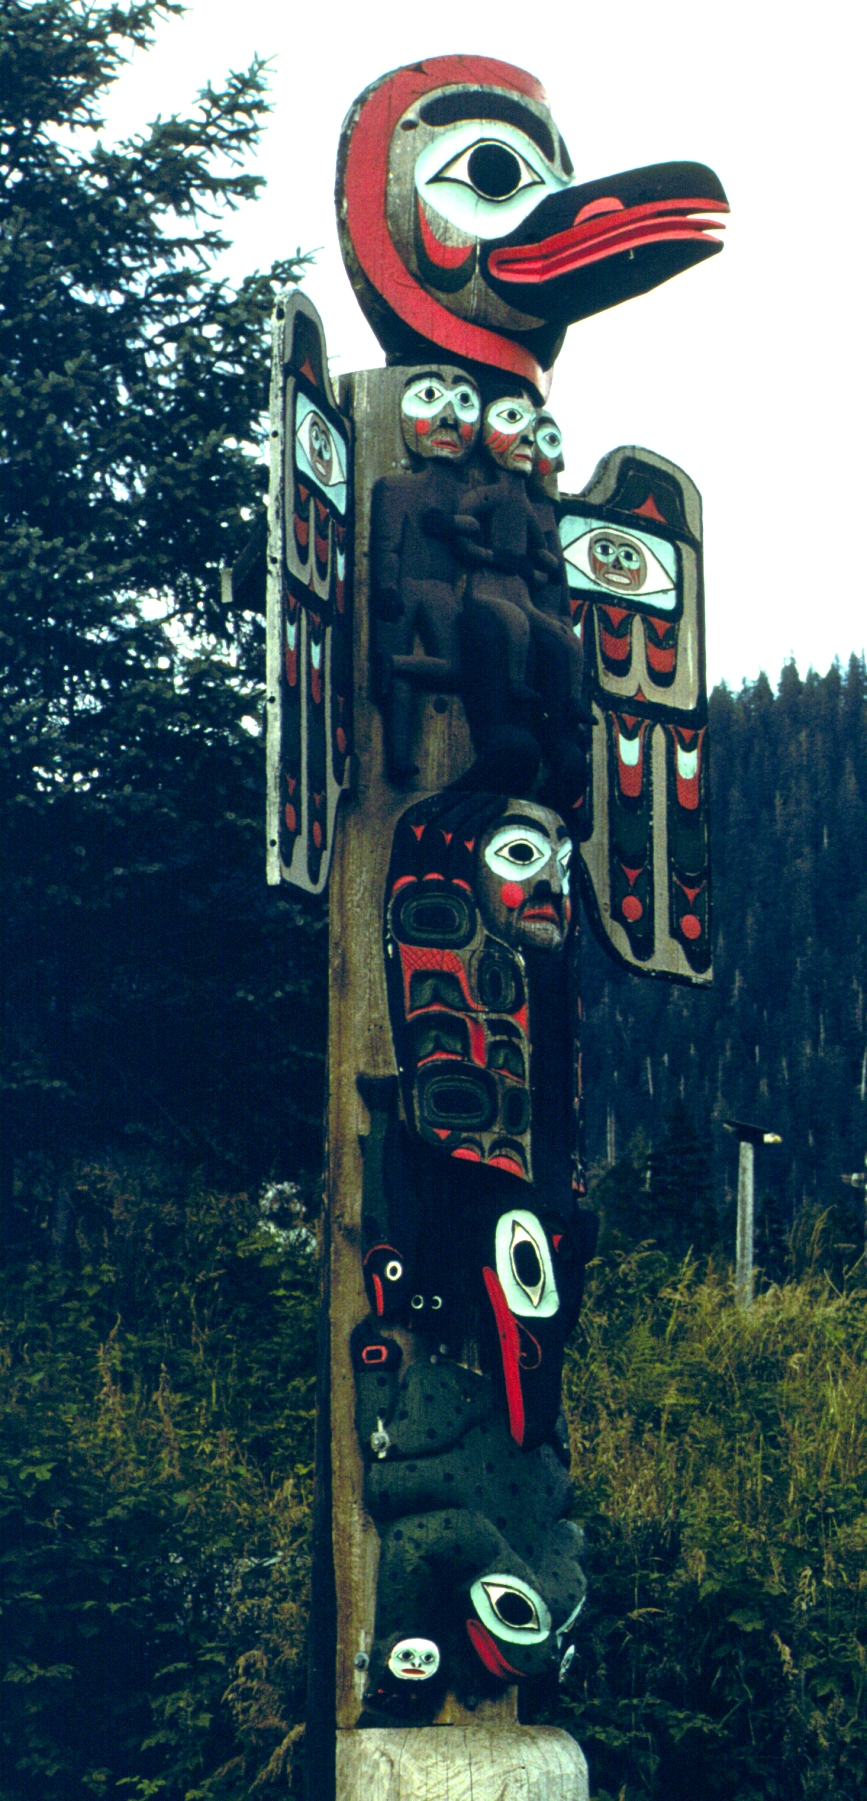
Raven and Sun Totem at Saxman Totem Park outside of Ketchikan.